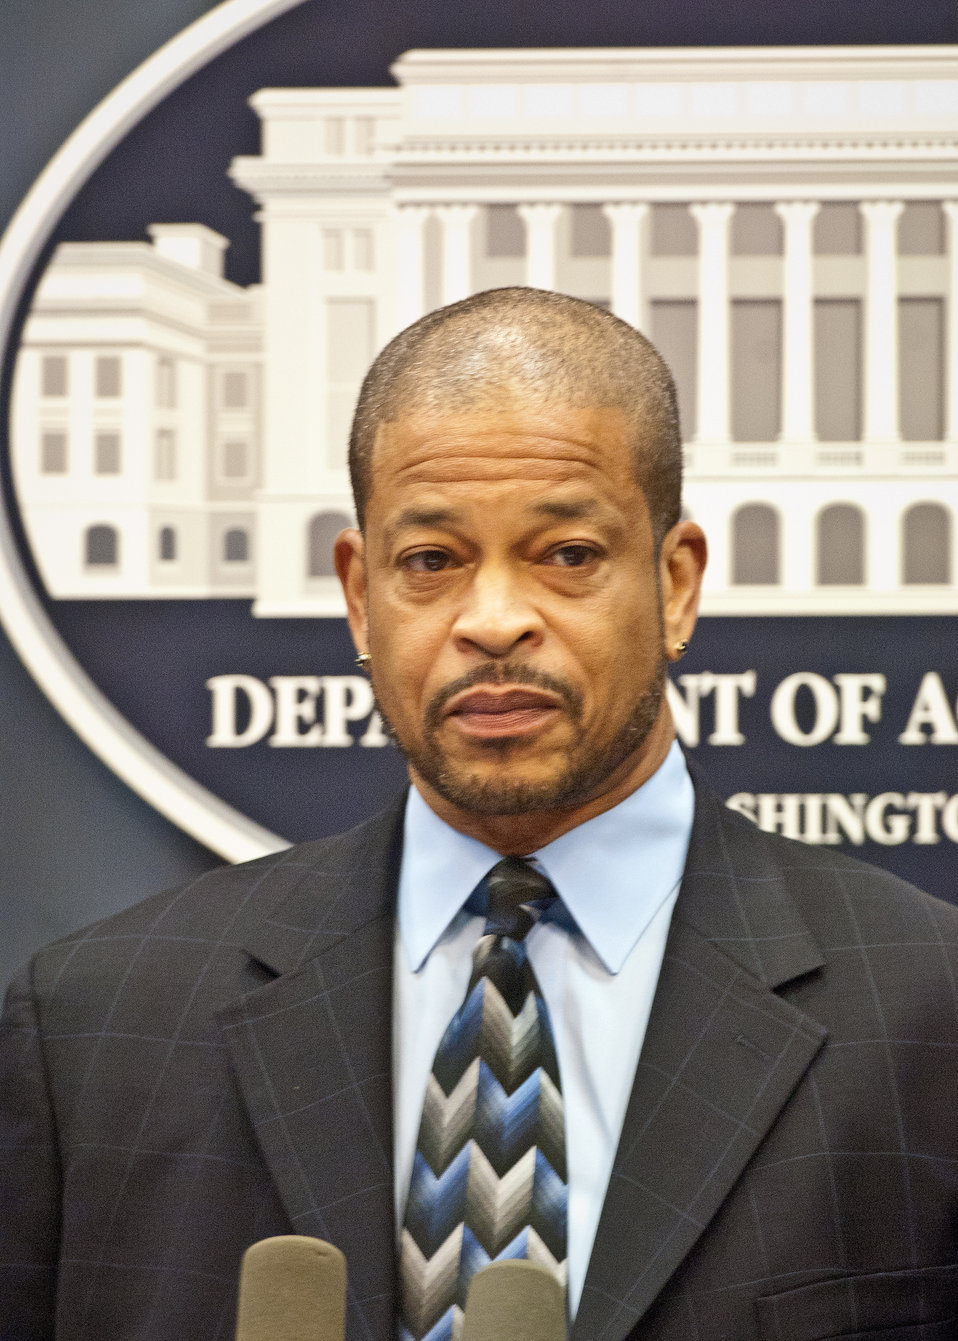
William Milton, Jr., Chief Human Capital Officer, Office of Human Resources Management welcomed participants to the United States Department of Agriculture Hispanic Roundtable at the United States Department of Agriculture, Monday, December 5, 2011 in Washington, DC. The roundtable focused on recruitment, retention and employee development for the purpose of developing the USDA Hispanic recruitment Plan. The roundtable hosted several national Hispanic partners and recognized USDA Hispanic organizations and associations.